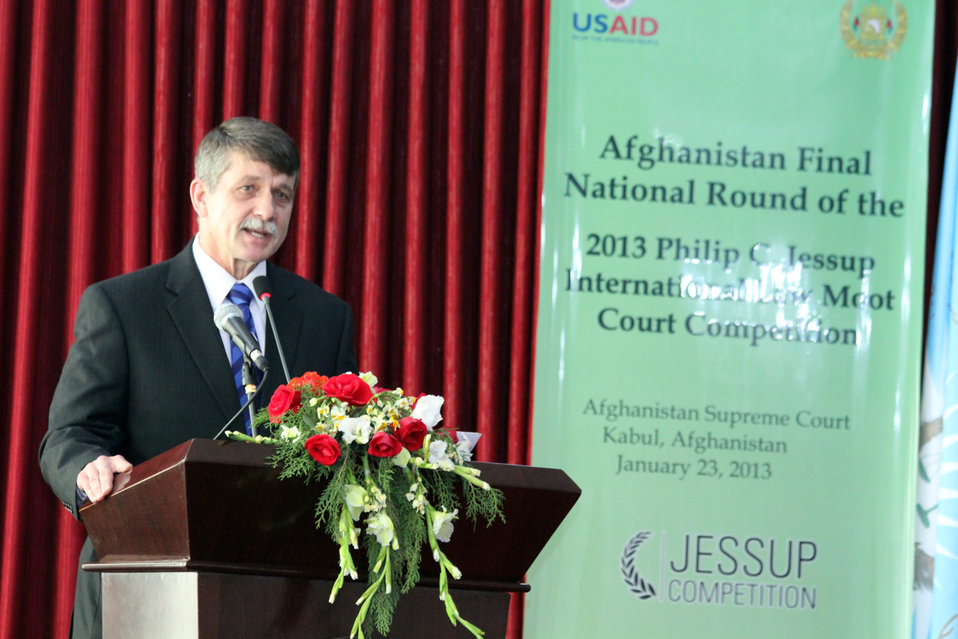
Afghanistan Final National Round of the 2013 Philip C.Jessup International Law Moot Court Competition